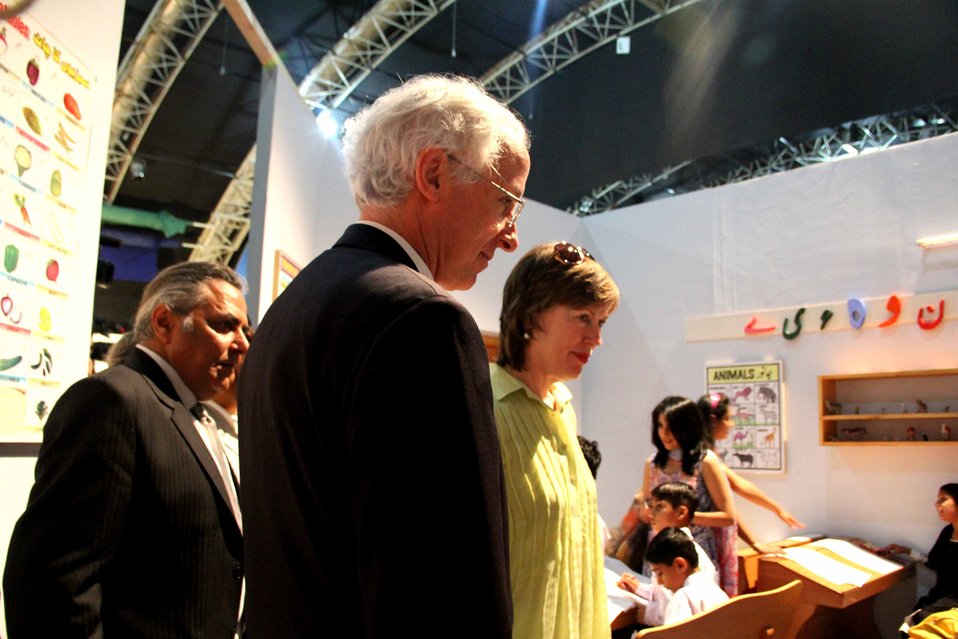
U.S. Ambassador’s Visit to Sim Sim Hamara Highlights U.S. Commitment to Improved Children’s Education in Pakistan at Lahore on 28 April, 2012